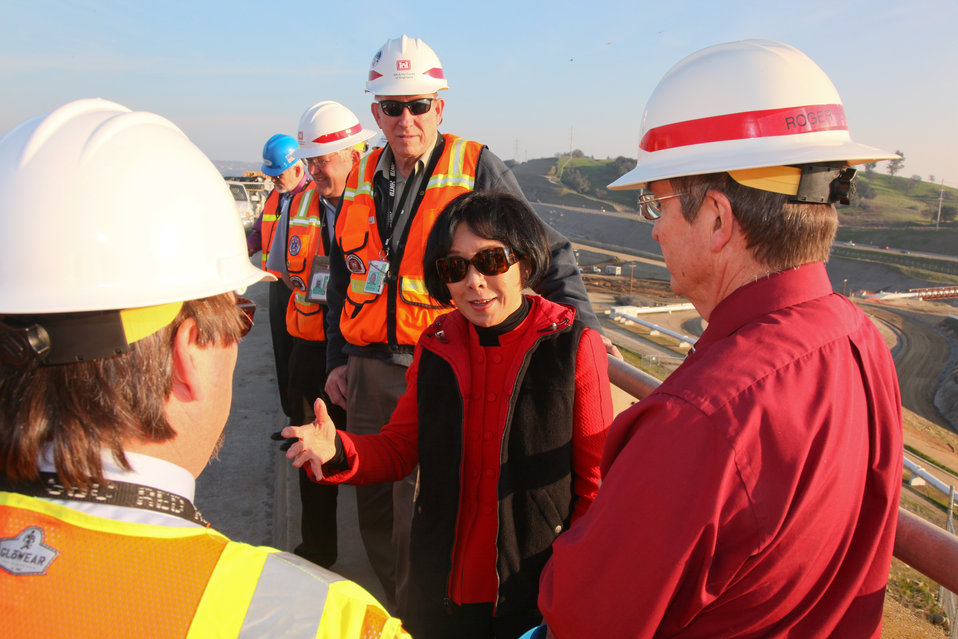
Corps provides tour of Folsom Dam Joint Federal Project to Congresswoman Matsui

FOLSOM, Calif. (Feb. 4, 2011) – The U.S. Army Corps of Engineers Sacramento District representatives provided a tour of the Folsom Dam Joint Federal Project site to U.S. Rep. Doris O. Matsui (center) here Feb. 3. The congresswoman witnessed firsthand ongoing construction of the new auxiliary spillway at the dam and was briefed on the status of the project by personnel from both the Sacramento District and Bureau of Reclamation.